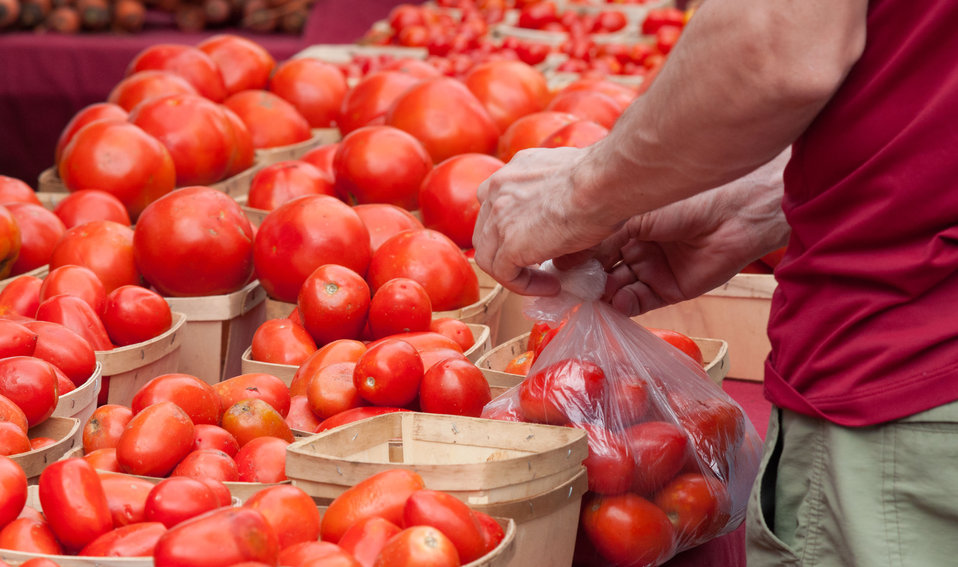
Worden Farm (www.wordenfarm.com) fresh picked organic tomato are ready for sale at the Saturday Morning Market, in St. Petersburg, FL, on April 14, 2012. Worden Farm is a family farm that provides certified organic produce to Southwest Florida through community supported agriculture (CSA) membership programs and retail sale at several farmer’s (community) markets. Chris Worden, Ph.D. and Eva Worden, Ph.D. founded and operates the farm that employs more than 20 people. Growing certified organic crops in the coastal sandy soil has required them to develop innovative farming techniques which help the farm as well as assist the studies of universities and farm industry. There are several Worden Farm apprenticeships that provide hands-on training in all aspects of the farm, to include direct marketing at the Saturday Morning Market, or other market sites. The farm also holds culinary and gardening workshops, and other interactive educational events. One of their organic certifications is from the U.S. Department of Agriculture (USDA) and they have partnered with the USDA Natural Resources Conservation Service (NRCS) for soil conserving windbreaks and long tunnel structures to nurture seedlings and extend the growing season.